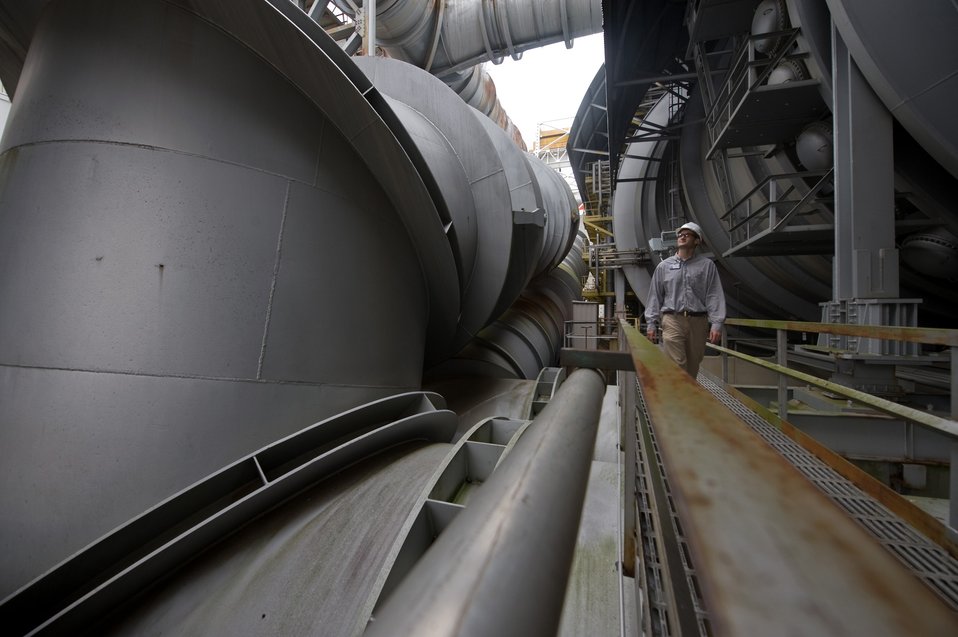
Wind power at Arnold AFB

Dr. Richard Roberts walks the outer ring of the diffuser section at the 16-foot supersonic wind tunnel Oct. 6, 2009, at Arnold Air Force Base, Tenn. Dr. Roberts is the project manager of the von Karman Gas Dynamics Facility and the Propulsion Wind Tunnel Facility located at Arnold Engineering Development Center on Arnold AFB. The facility is devoted to aerodynamic and propulsion integration testing of large-scale aircraft models.